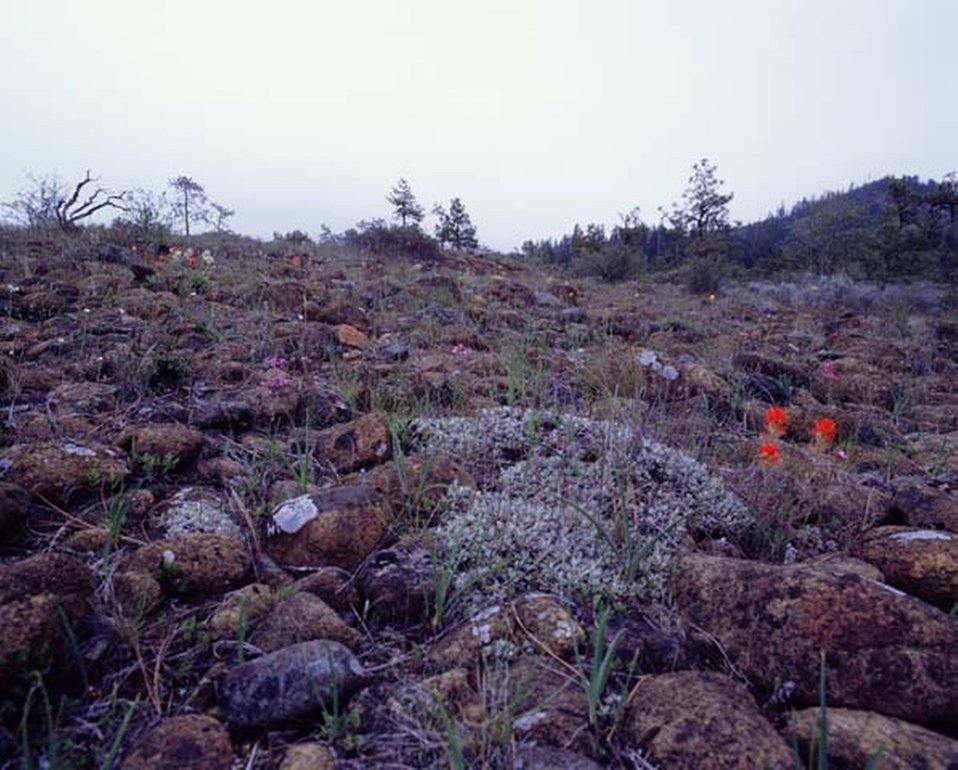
View of Rough & Ready Wildlife Viewing Area and Indian Paintbrush wildflowers.